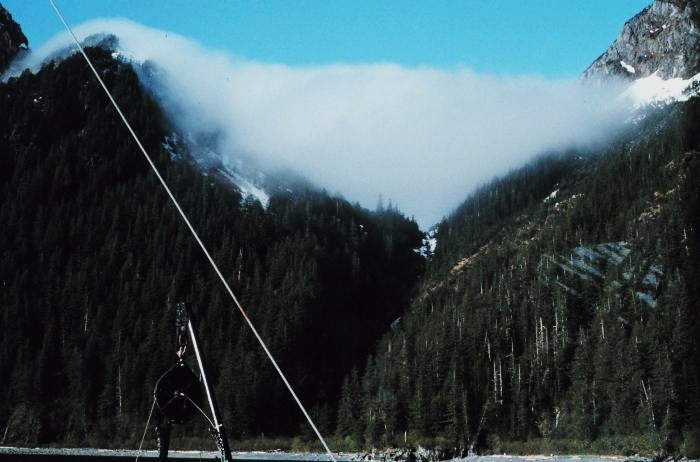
Fog tumbling through a break in the mountains at Prince William Sound